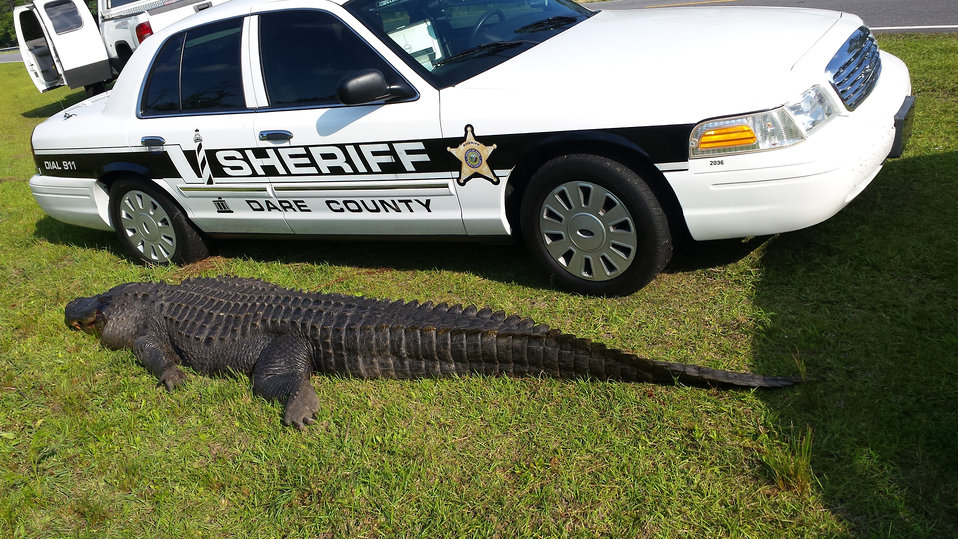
800 pound alligator struck and killed

Alligator River National Wildlife Refuge lost one of its larger alligators to a traffic accident on Sunday night. For many years, a large alligator has been regularly seen in a canal nearby during May and early June. Biologist Dennis Stewart says there is no way to confirm if this is the same alligator at this time, but it appears to be similar in size.